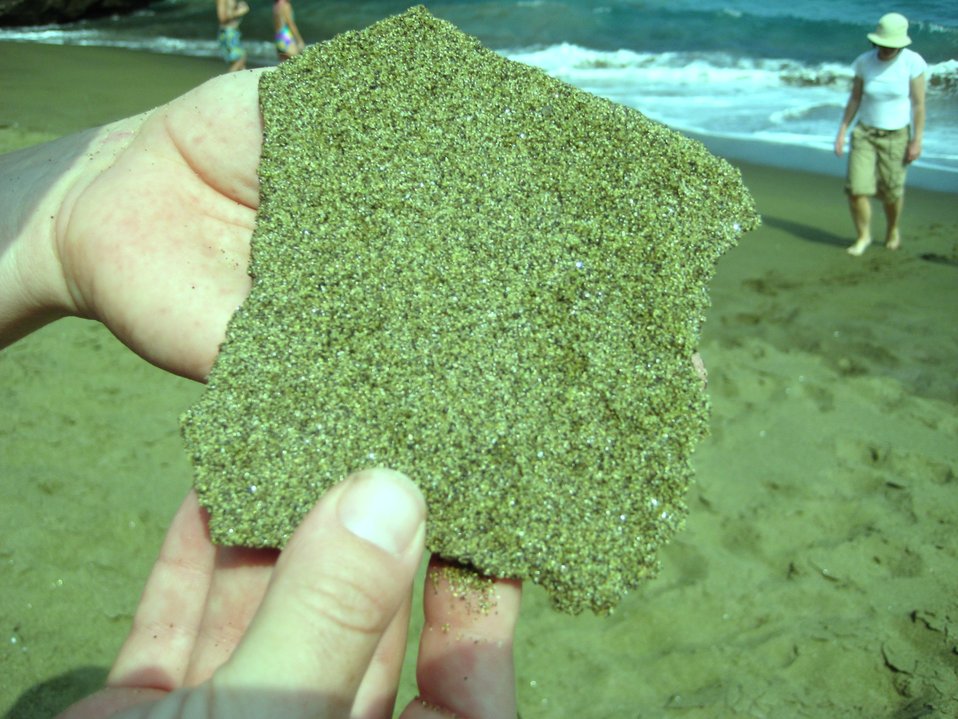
Green glauconitic sands from erosion of volcanic materials